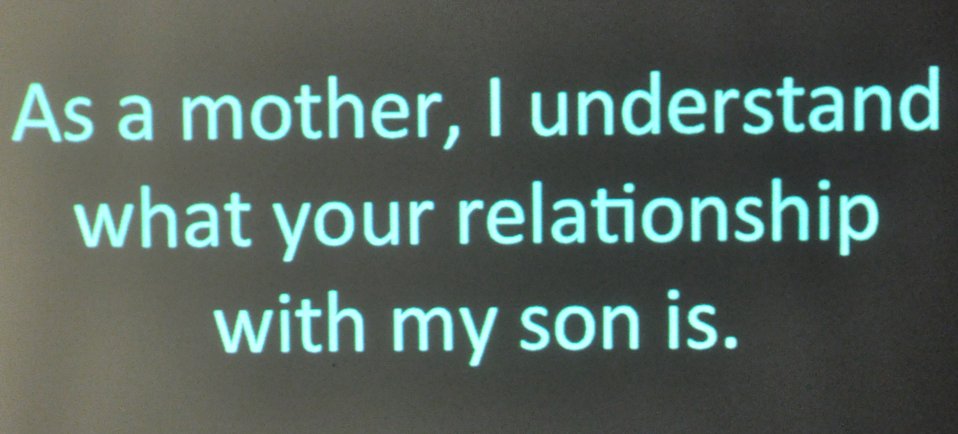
PEPFAR Musical Questions and Exclamations